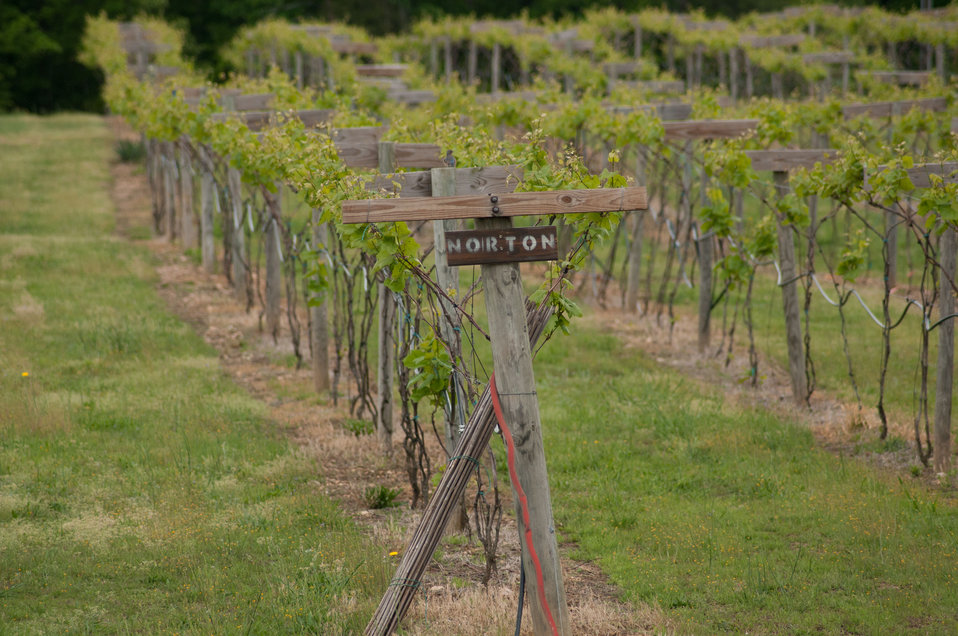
Cooper Vineyards in Louisa, VA, is the first winery on the East Coast and the second in the country to be awarded the fourth and highest, Platinum certification by Leadership in Energy and Environmental Design (LEED).
From a Virginia Wine Board Marketing Office press release, “The process of building a LEED platinum certified building was initially more expensive and arduous than co-owners, Jacque Hogge, MD and Geoffrey Cooper, MD expected, but they were able to get financial assistance from the United States Department of Agriculture. “Know that there are grants available to help with the costs of sustainable building projects,” Hogge advises to other potential green wineries. Cooper Vineyards received 2 of the 3 USDA (U.S. Department of Agriculture Rural Development (RD) Rural Energy Financing program) grants awarded in Virginia in 2010 to help with the expenses of their construction.”
Rural Energy Financing program focuses on loan guarantees, loans and grants to agricultural producers, businesses, cooperatives and rural residents for renewable energy systems and to make energy efficiency improvements.
The tasting room and building collects rainwater from the roof; uses low flow water fixtures to reduce usage by 40%; utilizes structurally insulated panels for the roof and walls; heats and cools the entire building using a geothermal system that includes pipes that are embedded in the parking lot; low-voltage LED lighting with daylight and occupancy sensors provide ample light when it is needed; a solar panel array provides more than 15% of the energy needs for the building, and much of the construction materials are from local and recycled material sources. For more information about USDA please go to www.usda.gov, Rural Development and Rural Energy Financing. LEED was developed by the U.S. Green Building Council (USGBC) is a 501 c3 non-profit organization committed to a prosperous and sustainable future for our nation through cost-efficient and energy-saving green buildings.